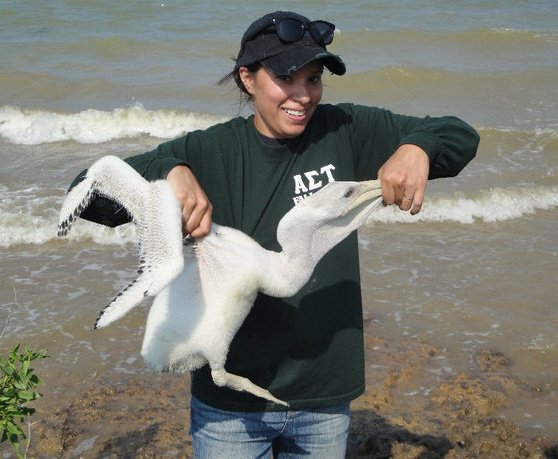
Pelican Banding

An SCA intern participates in pelican banding at Blackwater National Wildlife Refuge.